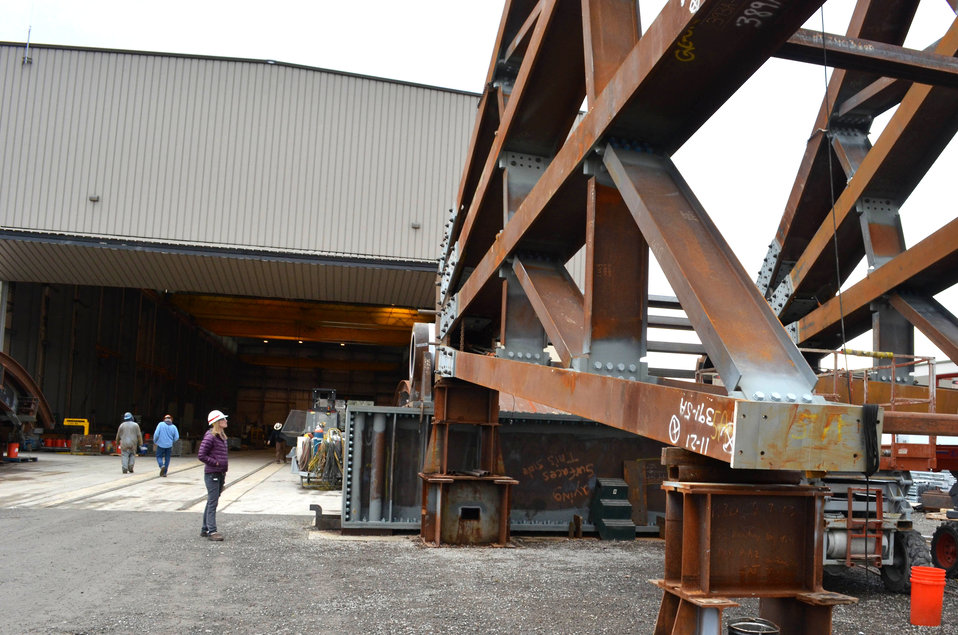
Giant Folsom spillway gates nearly ready for 600-mile journey to dam

Jackie Steiner, lead quality assurance inspector for the U.S. Army Corps of Engineers Sacramento District, examines a nearly-assembled Tainter gate Jan. 31, 2014, during a site visit to the Oregon Iron Works facility in Vancouver, Wash. Gate components are tested to ensure precise design requirements are met, so they will fit and function correctly when installed on the new Folsom Dam auxiliary spillway near Folsom, Calif. When complete, the spillway will allow operators to release water from Folsom Lake earlier and more safely during large storms to help reduce the risk of flooding for the Sacramento region. Photo cropped for emphasis.